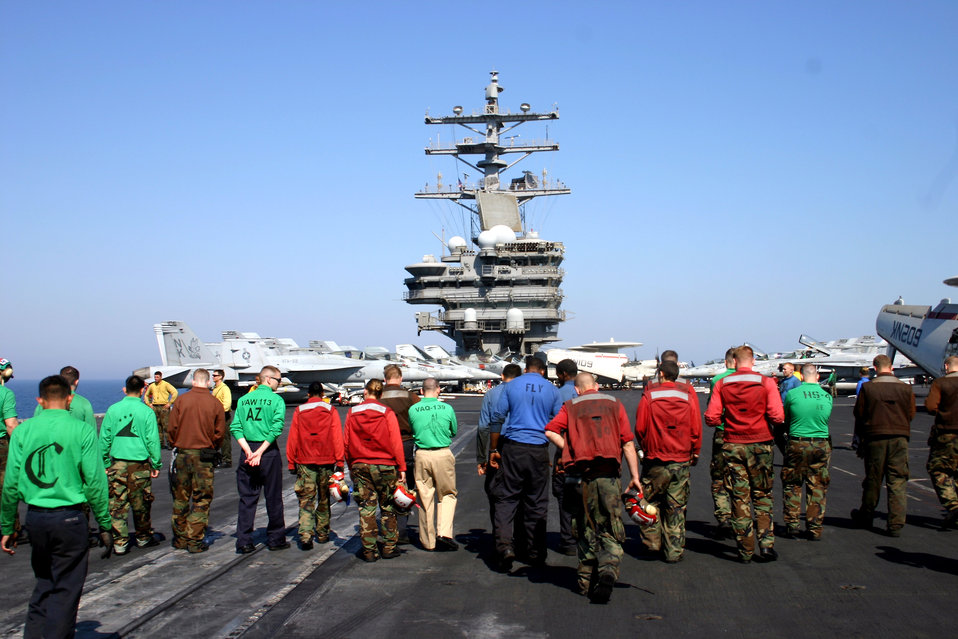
Same fight by land or sea

Sailors conduct a foreign object damage, or FOD, walk before flying operations Friday, March 31, 2006, aboard the USS Ronald Reagan. The ship is deployed to the Arabian Gulf in support of operations Iraqi Freedom and Enduring Freedom.